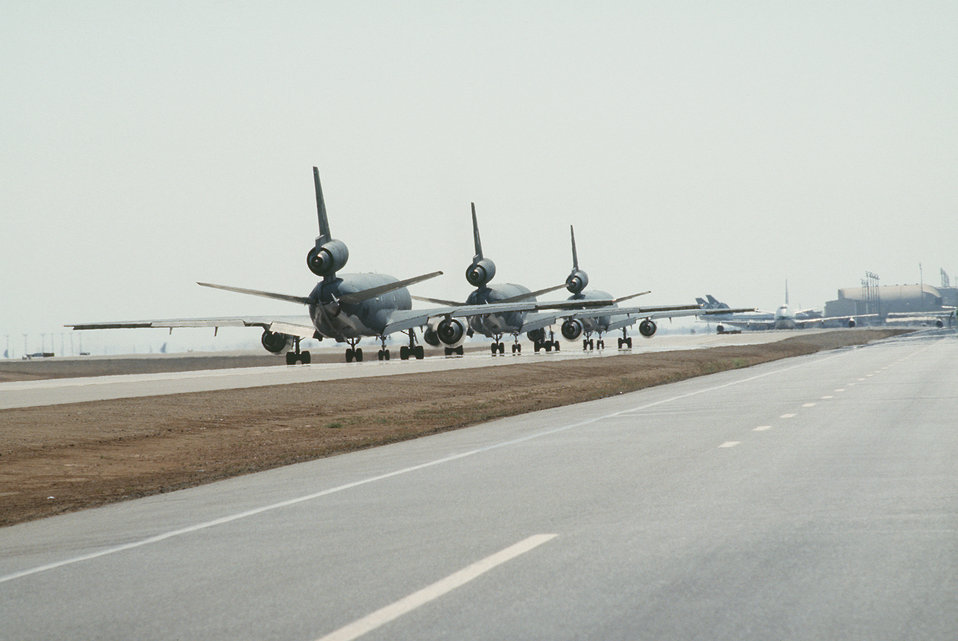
Three KC-10A Extender tanker aircraft taxi down the runway

1990's -- Three KC-10A Extender tanker aircraft taxi down the runway in preparation for supporting a daytime bombing mission on Iraqi position during Operation Desert Storm.